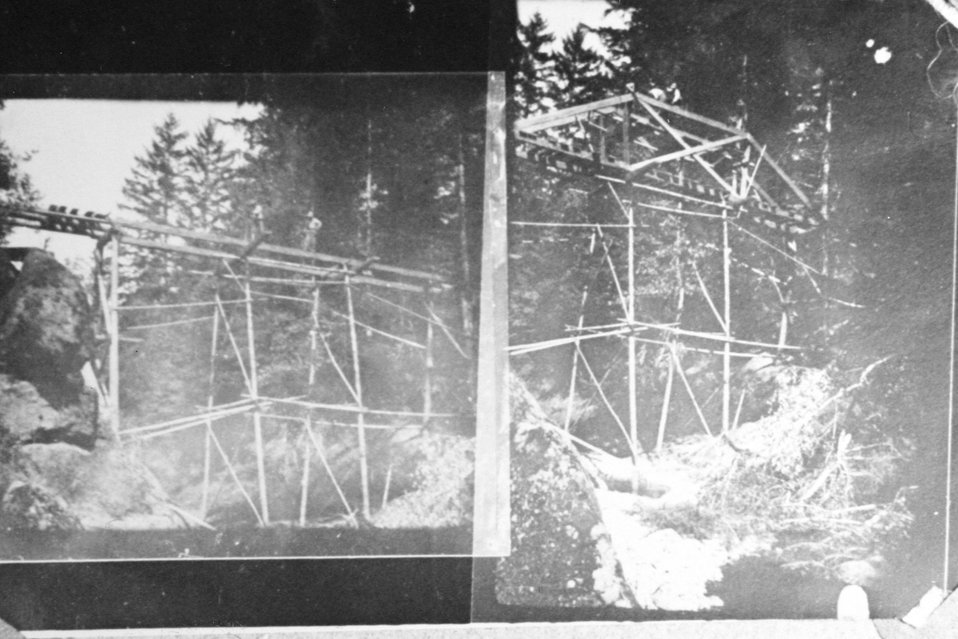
Bridge construction at Mule Creek.